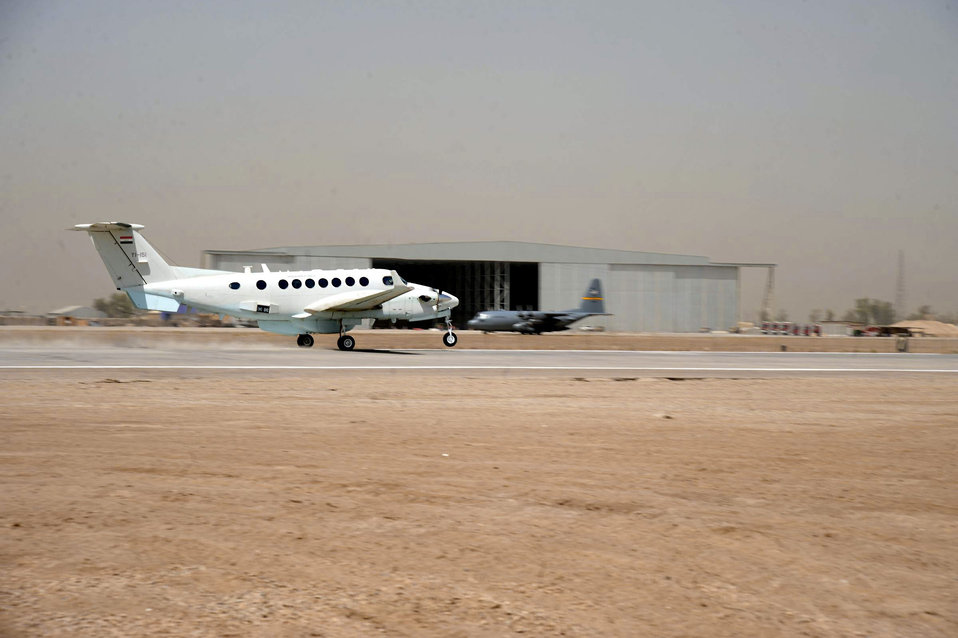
Sather renovates runway, paves way for Iraq's future

An Iraqi King Air 300 takes off on a refurbished runway June 16 at Sather Air Base, Iraq. The aircraft was the first to test out the revamped runway. The completion of runway repairs wrapped up the first stage of an estimated 15-month, 11-phase, $33 million airfield rehabilitation project.